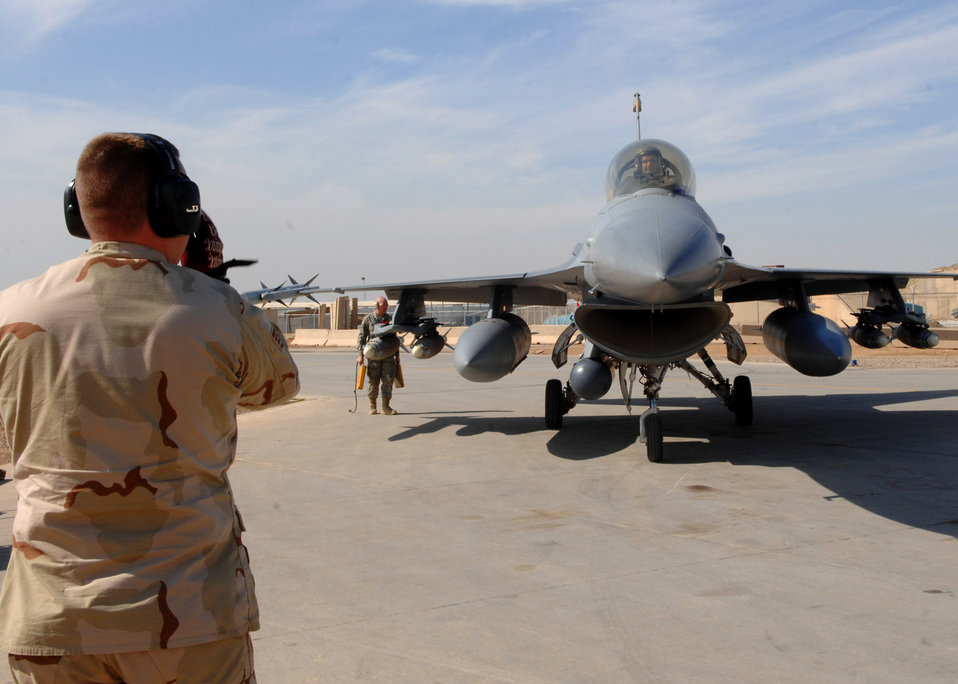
Pilot reaches 1,000 combat hours flown

Lt. Col. George Uribe taxies into a hardened aircraft shelter after completing 1,000 combat flying hours as an F-16 Fighting Falcon pilot Feb. 17 at .Balad Air Base, Iraq. Colonel Uribe is a 332nd Expeditionary Operations Group fighter pilot and deployed from Tyndall Air Force Base, Fla.